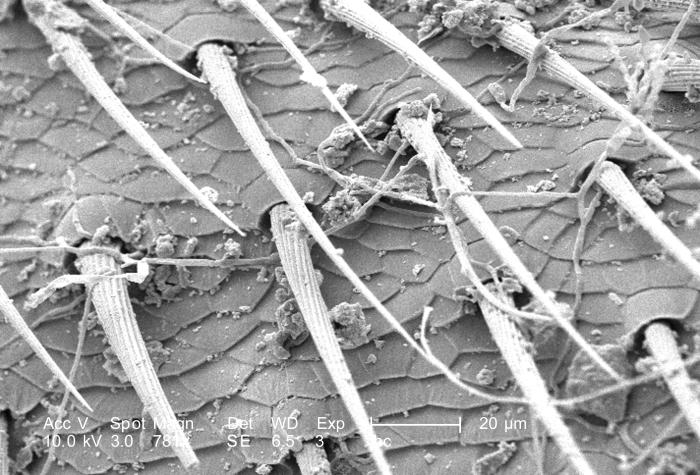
Under a high magnification of 781X, this scanning electron micrograph (SEM) revealed some of the exoskeletal ultrastructural morphology of an unidentified debris-laden insect, which had been discovered deceased in the suburbs of Decatur, Georgia. Depicted in this particular image was a section of one of the insect's six legs, which emanated from its thoracic region, located between its head and abdominal regions. The scattered particulate matter adorning the insect's exoskeletal surface was merely environmental debris common to its habitat. The fact that this organism maneuvered about on jointed legs, placed it into the Phylum Arthropoda, i.e., Arthro